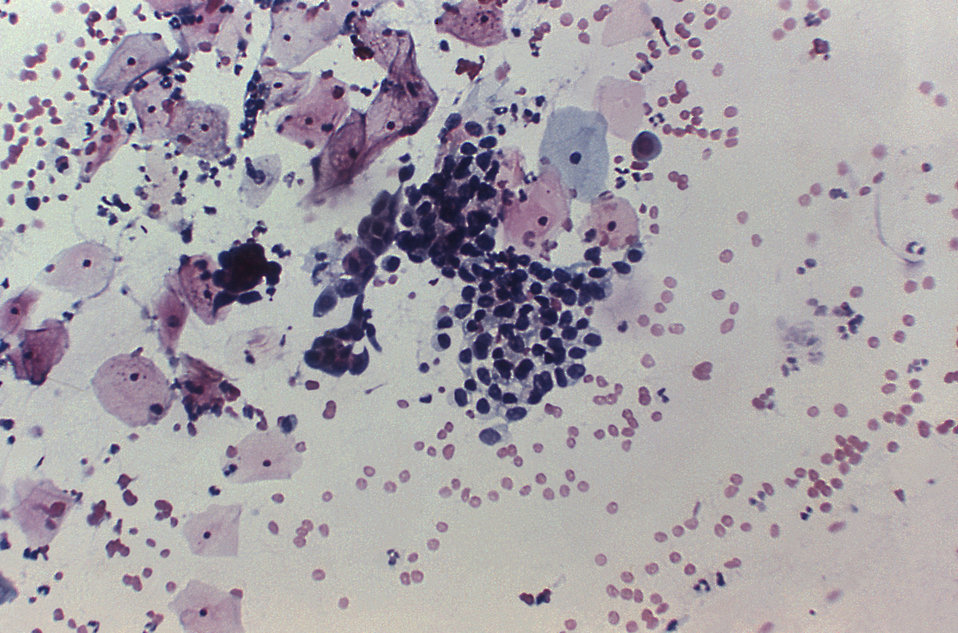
Under a magnification of 610X, this Papanicolaou stained (Pap stain) photomicrograph reveals some of the ultrastructural histopathologic changes found in a vaginal tissue biopsy specimen indicative of adenocarcinoma of the vagina. In this case, involving a teenage girl, it was believed that the onset of this cancer may have been due to the fact that the patient's mother had taken diethylstilbestrol (DES) while pregnant, as a treatment to avoid a possible spontaneous abortion. See PHIL 14767, for a slightly higher magnification of these abnormal vaginal epithelial cells.